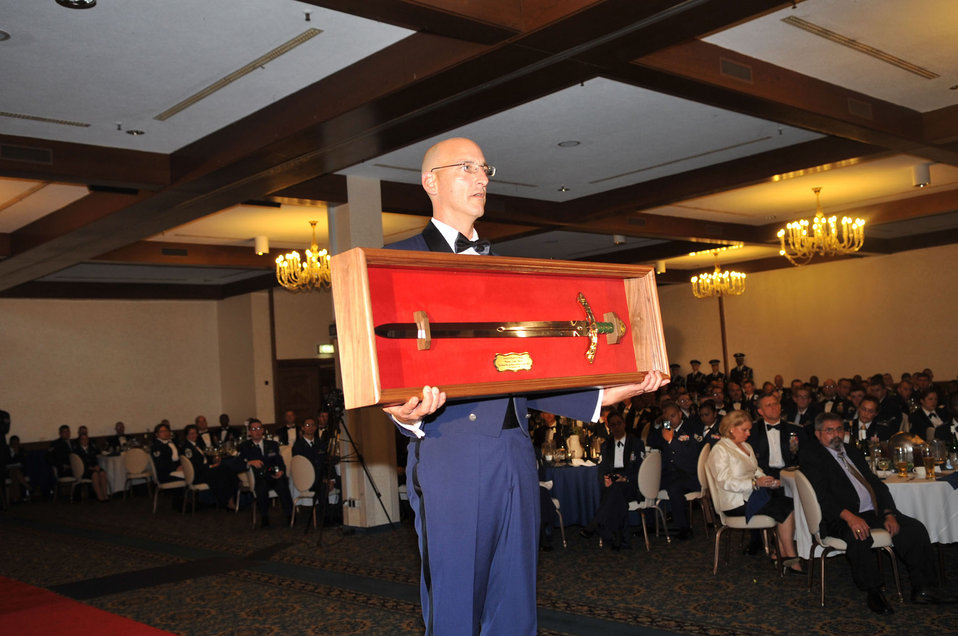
Airmen bestow highest enlisted honor

Chief Master Sgt. Mitchell Stippel presents the Order of the Sword to Gen. Roger A. Brady during a ceremony Sept. 8, 2010, at Ramstein Air Base, Germany. As the 19th recipient of USAFE's Order of the Sword, General Brady was given the highest honor someone can receive from the Air Force's enlisted corps. Chief Stippel is the 435th Air Ground Operations Wing command chief. General Brady is the U.S. Air Forces in Europe commander.